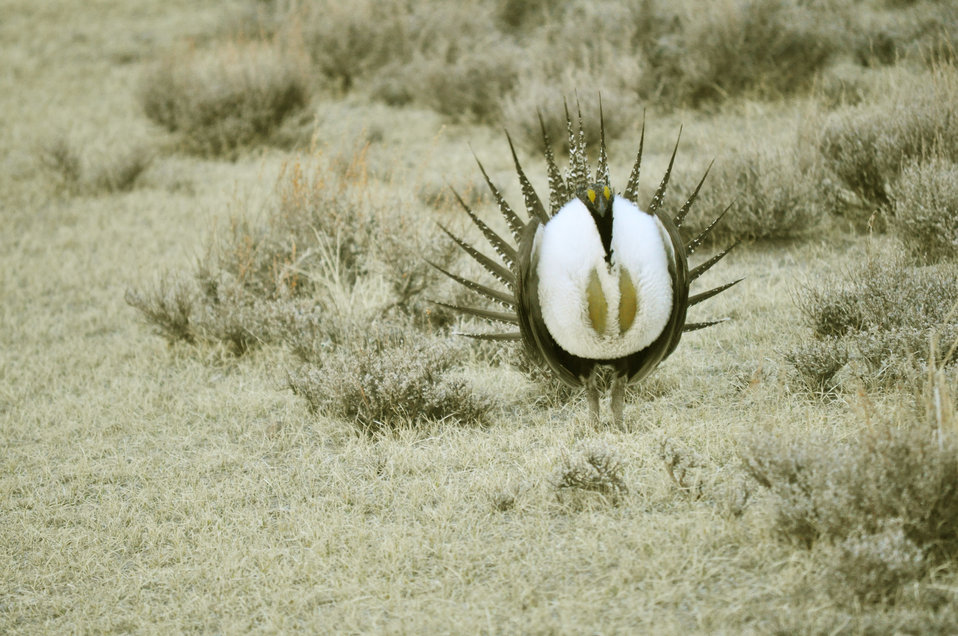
Male greater sage-grouse struts at lek (dancing or mating grounds) to attract females near Bodie, California.